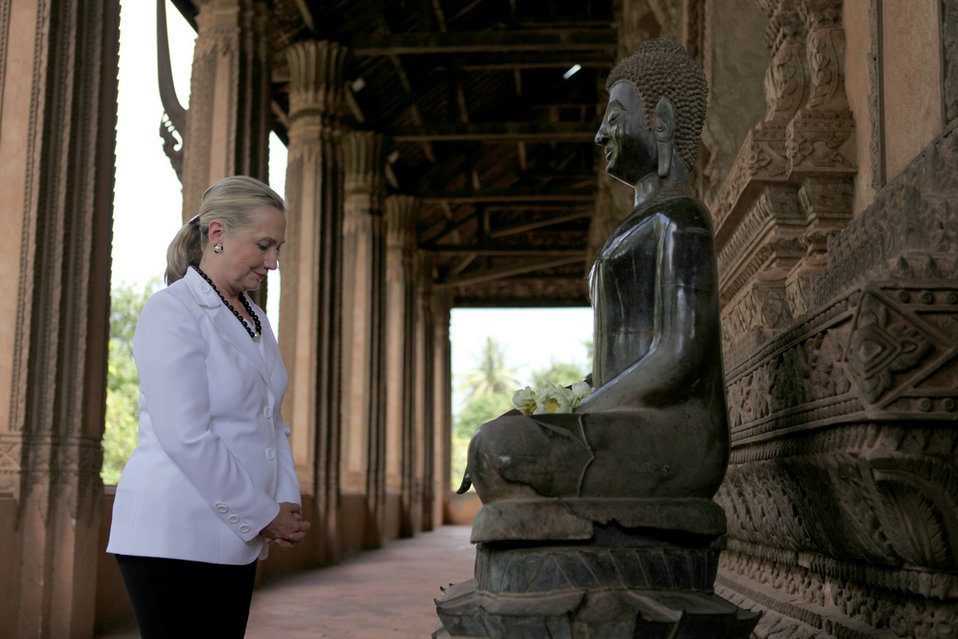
Secretary Clinton Stands in Front of the Statue

U.S. Secretary of State Hillary Rodham Clinton stands in front of a statue after laying flowers during a tour of the Ho Phra Keo Temple in Vientiane, Laos, on July 11, 2012.